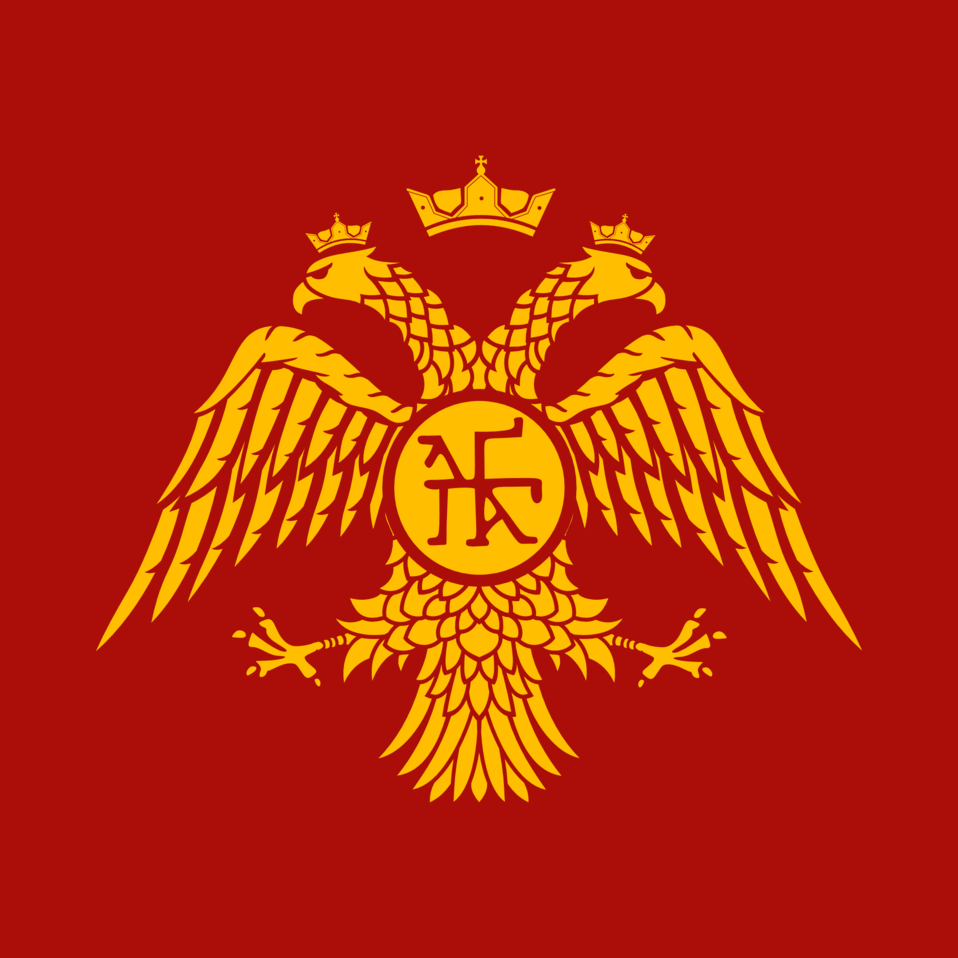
Ελληνικά: Έμβλημα της δυναστείας των Παλαιολόγων Latina: Signum Palaiologii Emblem of the Palaiologos Dynasty (1400s) The double-headed eagle with the sympilema (dynastic cypher) of the Palaiologoi in the center. The double-headed eagle motif was used as the emblem of the Eastern Roman Empire (Byzantine Empire) during the 14th and 15th centuries, when ruled by the Palaiologos Dynasty.